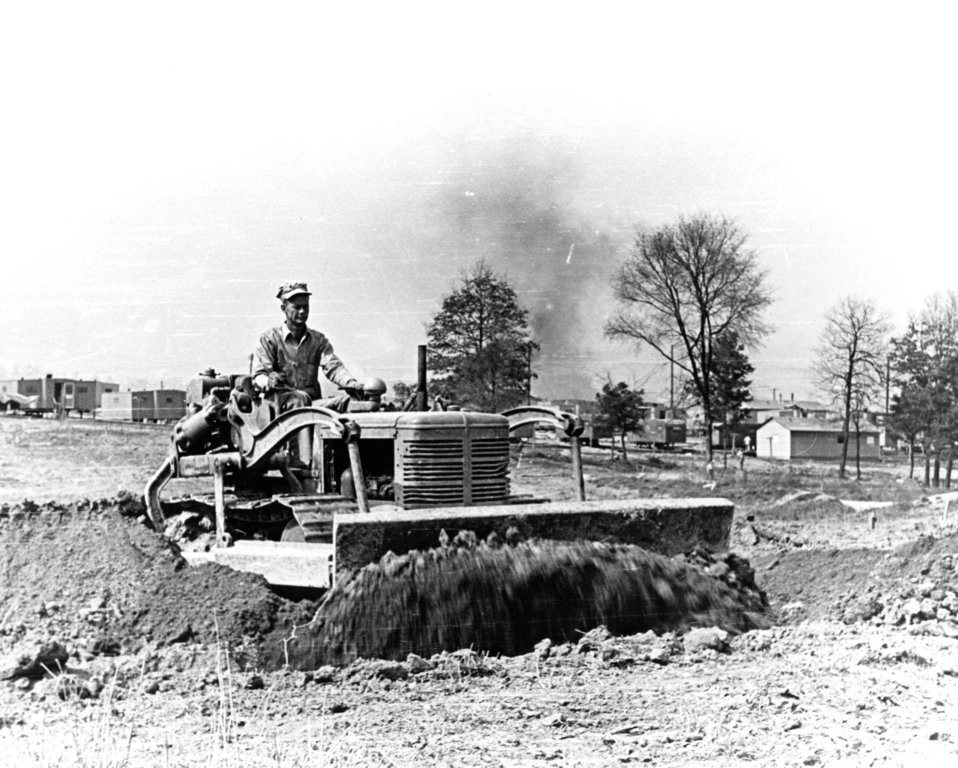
Construction activity at Oak Ridge